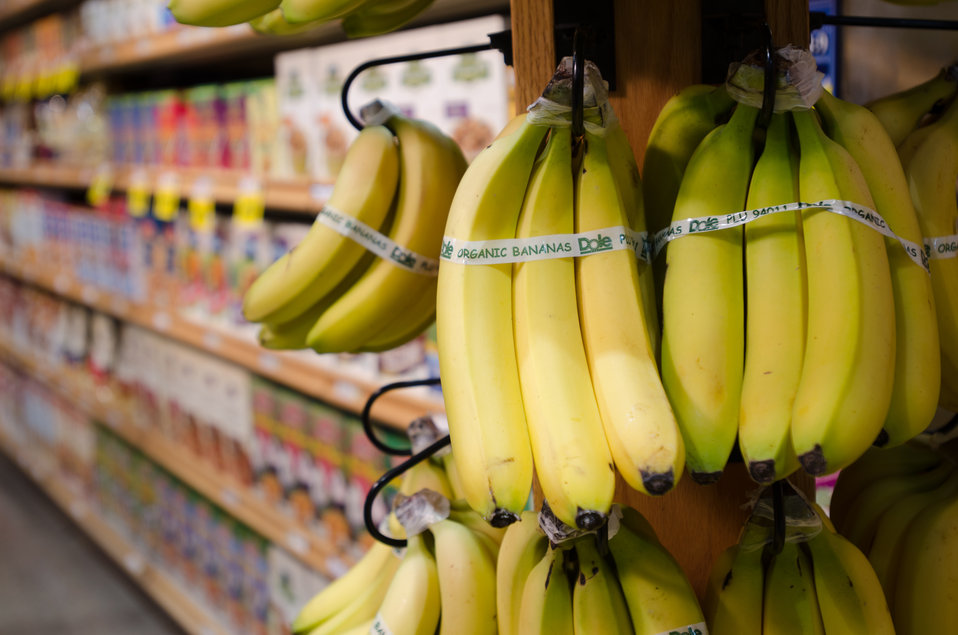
Bananas and cereals at a grocery store in Fairfax, Virginia, on March 3, 2011.